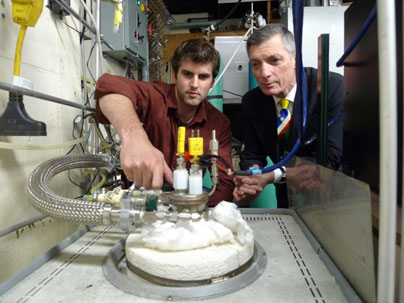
ARPA-E Sadoway - MIT